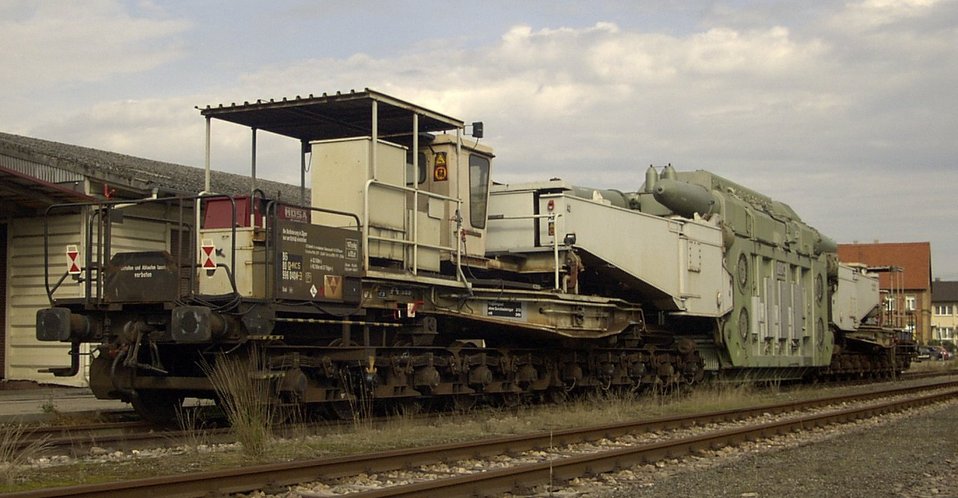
Deutsch: Uaai 831 in Hüffenhardt